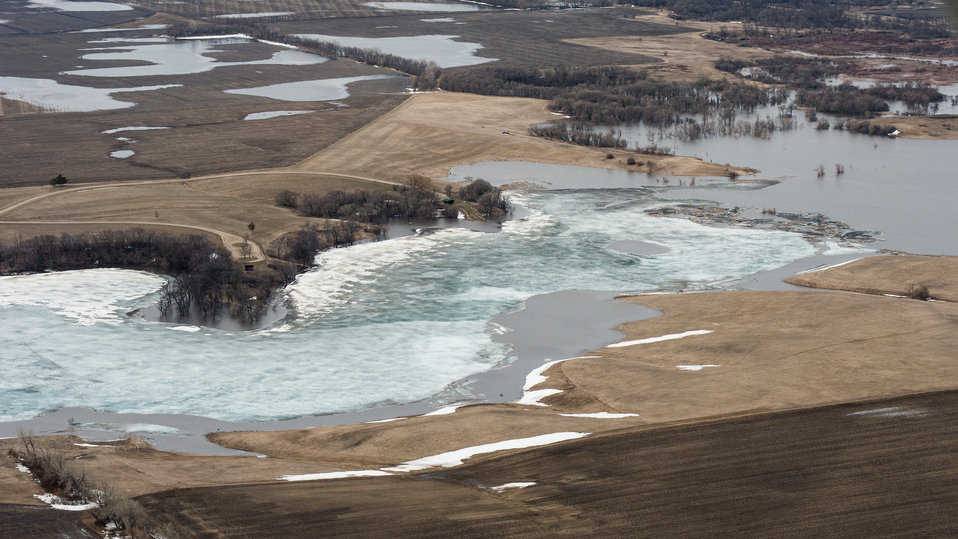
Fordville Dam in Grand Forks County, ND, part of the Red River basin, on Wednesday, May 1, 2013. To learn about the Red River Basin Initiative, see www.mn.nrcs.usda.gov/news/features13/RRBI.html.